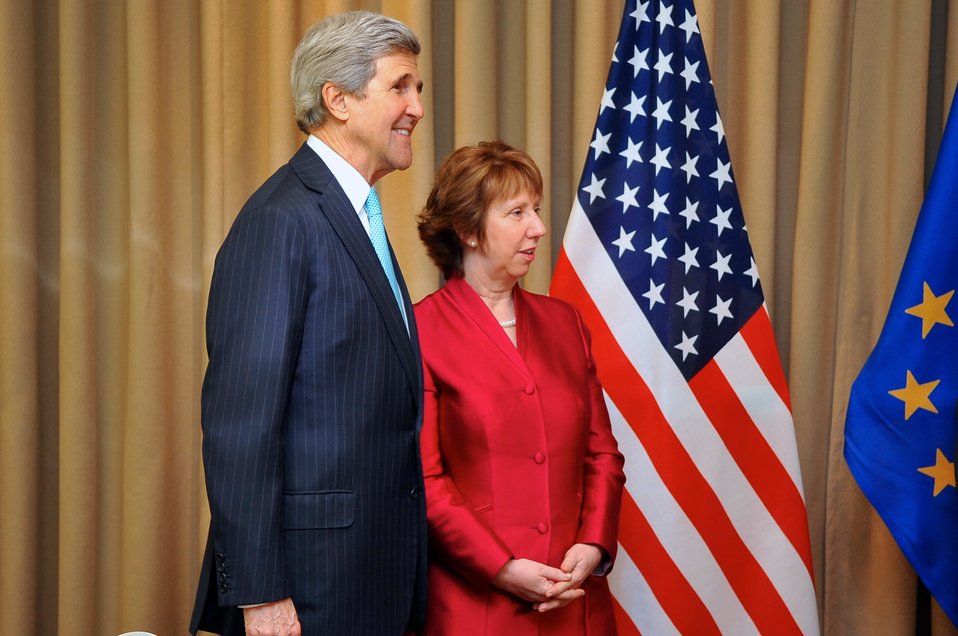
Secretary Kerry Poses With EU High Representative Ashton Before Ukraine Talks in Geneva

U.S. Secretary of State John Kerry poses with European Union High Representative Catherine Ashton before the two joined with Russian and Ukrainian officials for four-way talks about Ukraine in Geneva, Switzerland, on April 17, 2014.